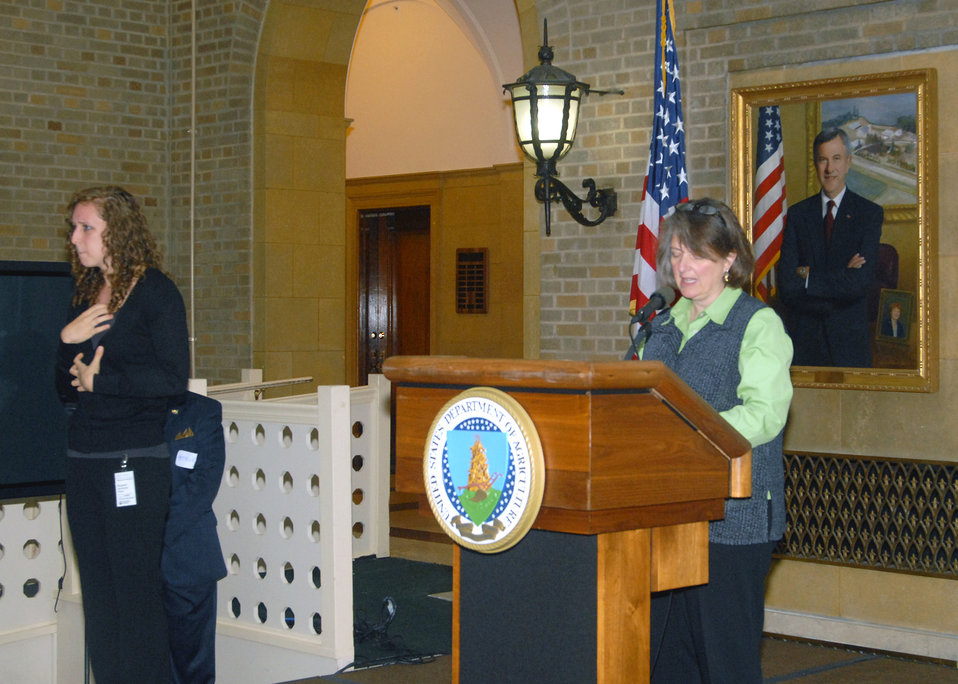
Agriculture Deputy Secretary Kathleen Merrigan speaks at the U.S. Department of Agriculture’s (USDA) opening ceremony for the 2012 Combined Federal Campaign on Tuesday, Sept. 18, 2012 at the USDA Whitten Building, in Washington, D.C. USDA has set a goal of raising just under $2 million from their employees in the national capital area. The theme for this year’s CFC campaign is 'Choose Hope'.